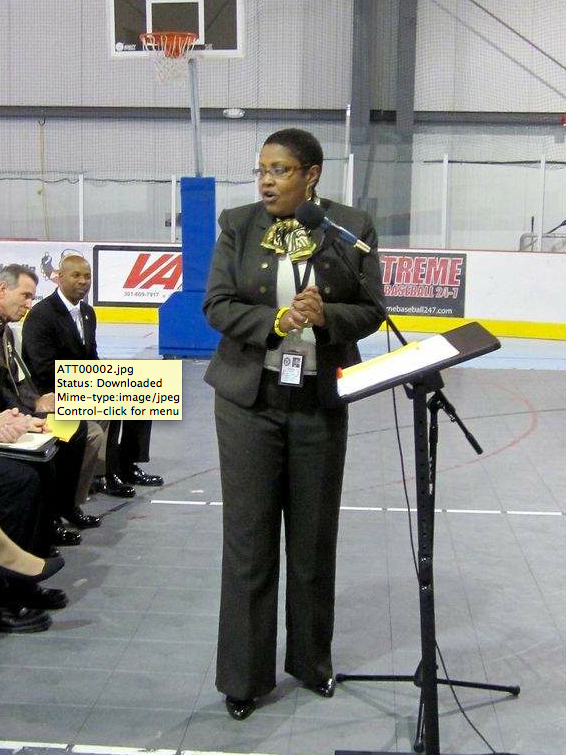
Charles County JDC Graduation

Charles County Commissioner Debra Davis speaks to two teenagers graduating from Charles County Juvenile Drug Court during a Tuesday ceremony while Charles County Sheriff Rex Coffey and Chaplain John Lewis listen.